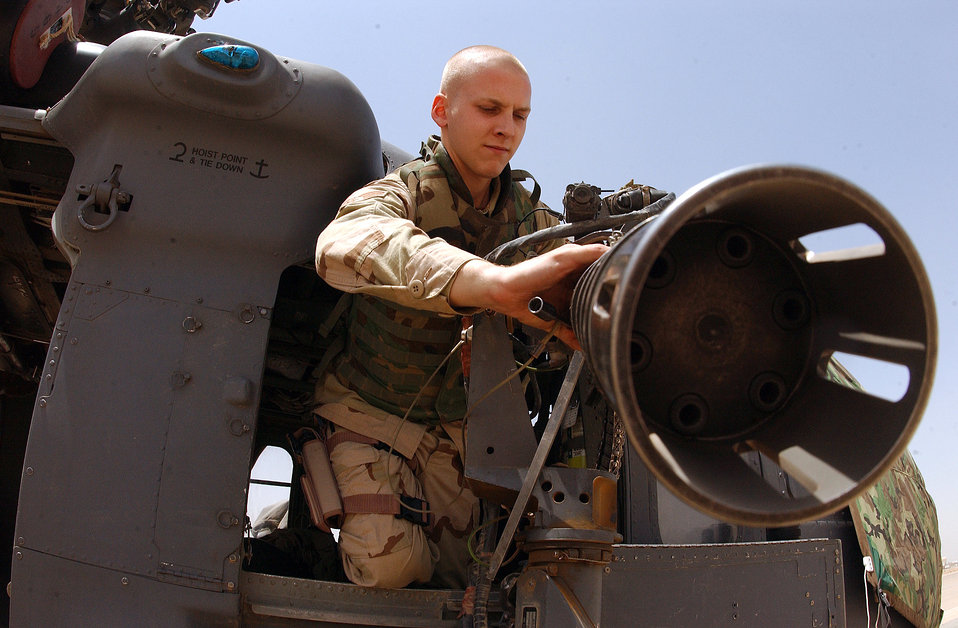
Airman fights his way back to Iraq after serious injury

BALAD AIR BASE, Iraq -- Senior Airman Douglas Batchelder times the ammunition feeder on an HH-60G Pave Hawk helicopter machine gun. In 2003, Airman Batchelder suffered numerous injuries from flying shrapnel of a rocket that exploded in his tent in Baghdad. After five hand surgeries, he is back in Iraq with the 64th Helicopter Maintenance Unit here.